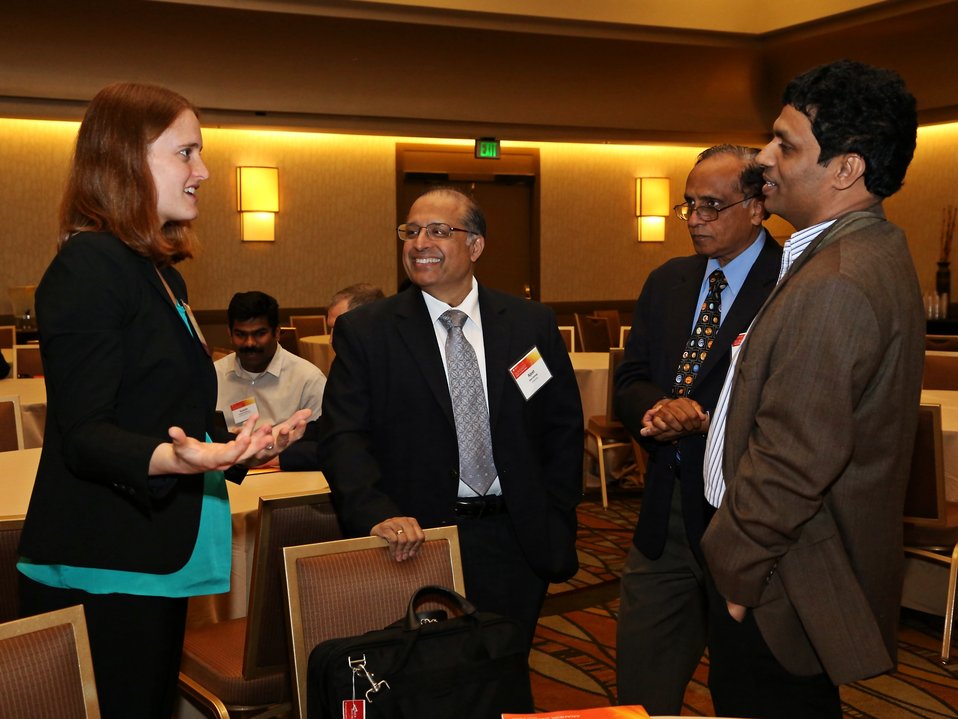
Day 2 Subprogram Overviews 2

Dr. Becca Jones-Albertus, Photovoltaics Program Manager chatting with attendees.